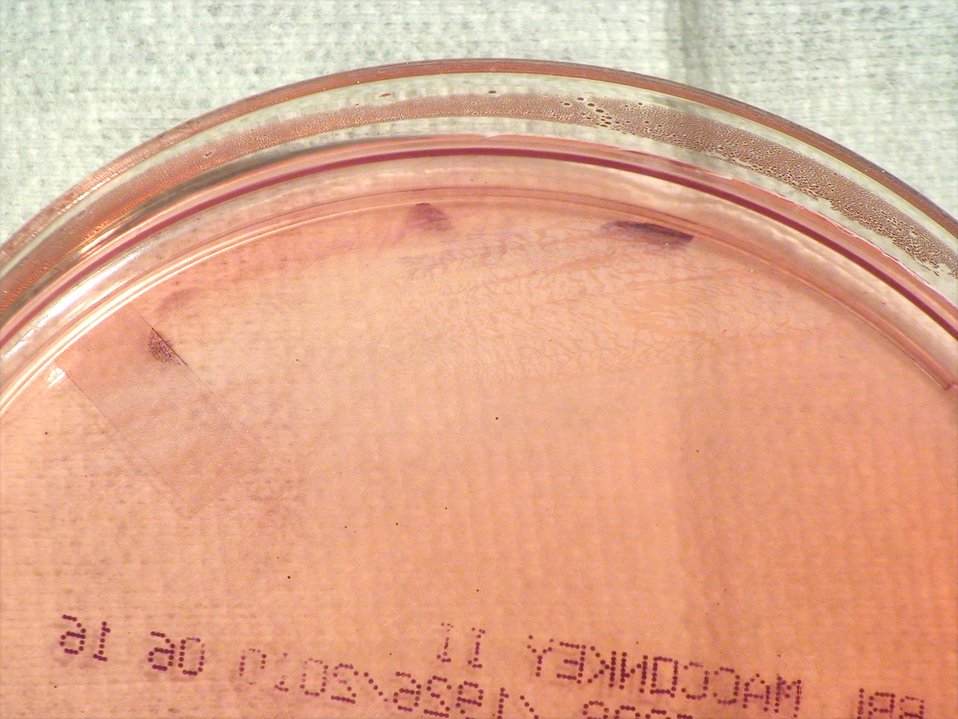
A closer view of PHIL 12481, this photograph depicts the colonial morphology displayed by Gram-negative Brucella suis bacteria, which was grown on a medium of MacConkey agar, for a 24 hour time period, at a temperature of 37�C. Also see PHIL 12483, for an additional close view of these bacterial colonies. Brucella spp. bacteria are pathogenic towards humans, and cause a disease known as brucellosis.